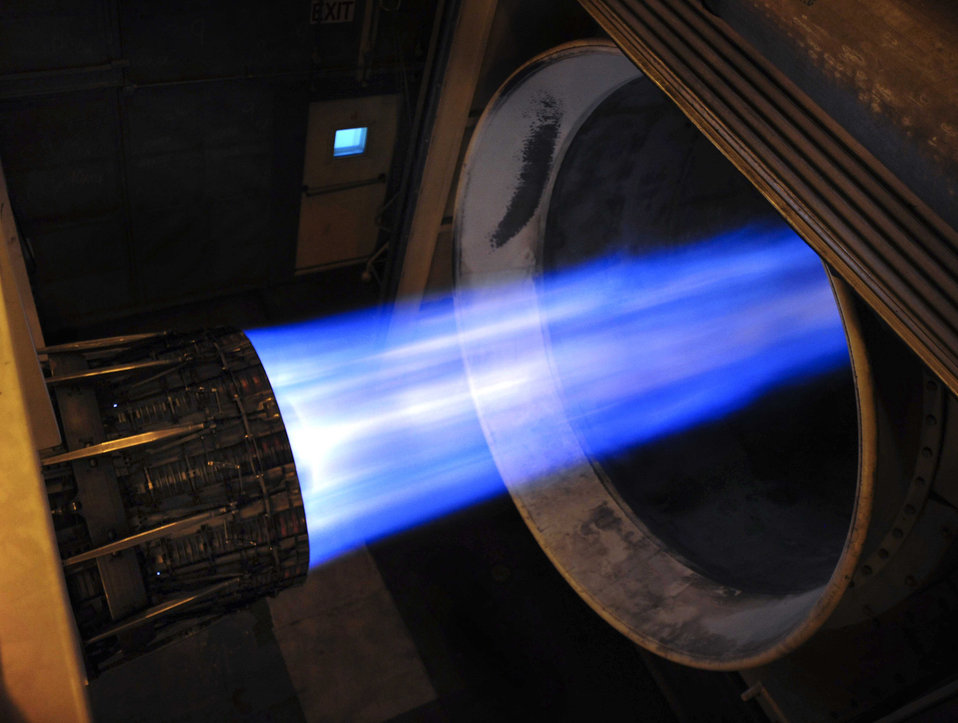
Whooosh!

A B-1B Lancer F-101 turbofan engine is tested Oct. 6, 2010, at Ellsworth Air Force Base, S.D. The B-1 has four F-101 engines, with each capable of providing more than 30,000 pounds of thrust with afterburner.